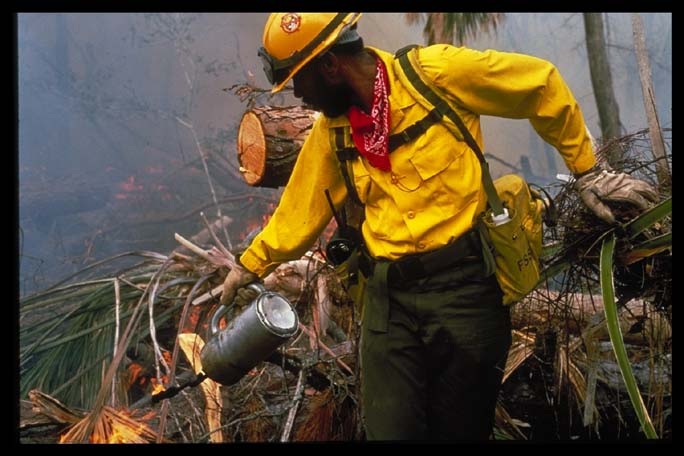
Prescribed fire